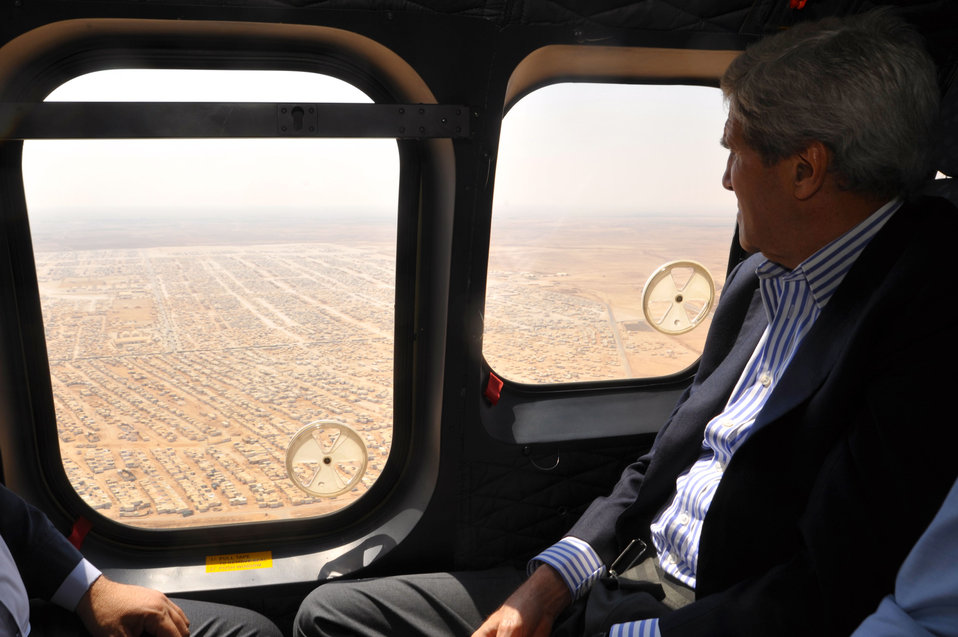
Secretary Kerry Views the Mrajeeb al-Fhood Camp for Syrian Refugees

U.S. Secretary of State John Kerry views the Mrajeeb al-Fhood camp for Syrian refugees as he flies back to Amman, Jordan, from visiting the nearby Za'atri refugee camp on July 18, 2013.